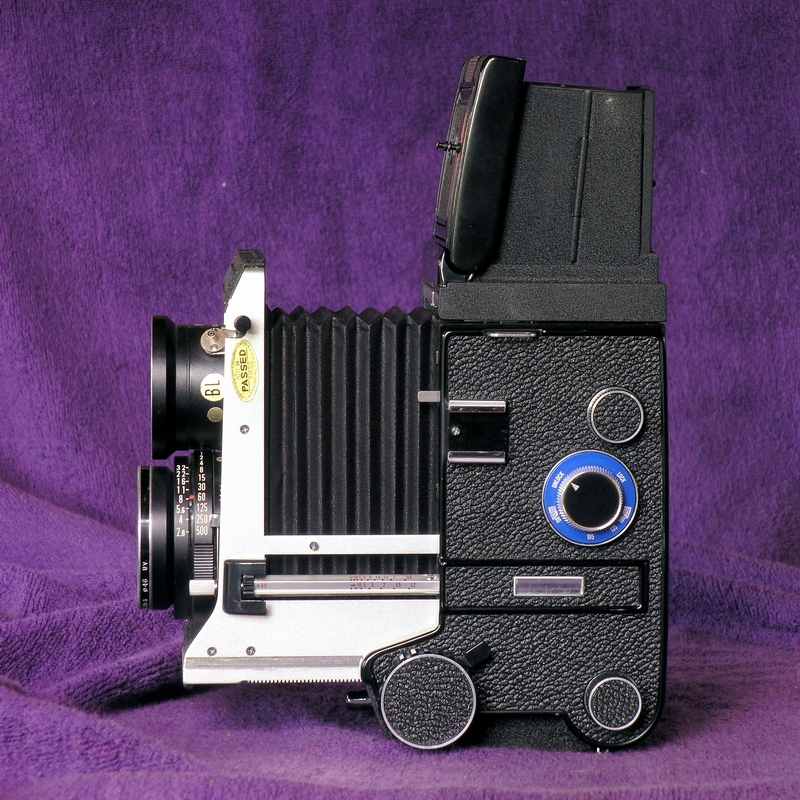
DANYvanvee